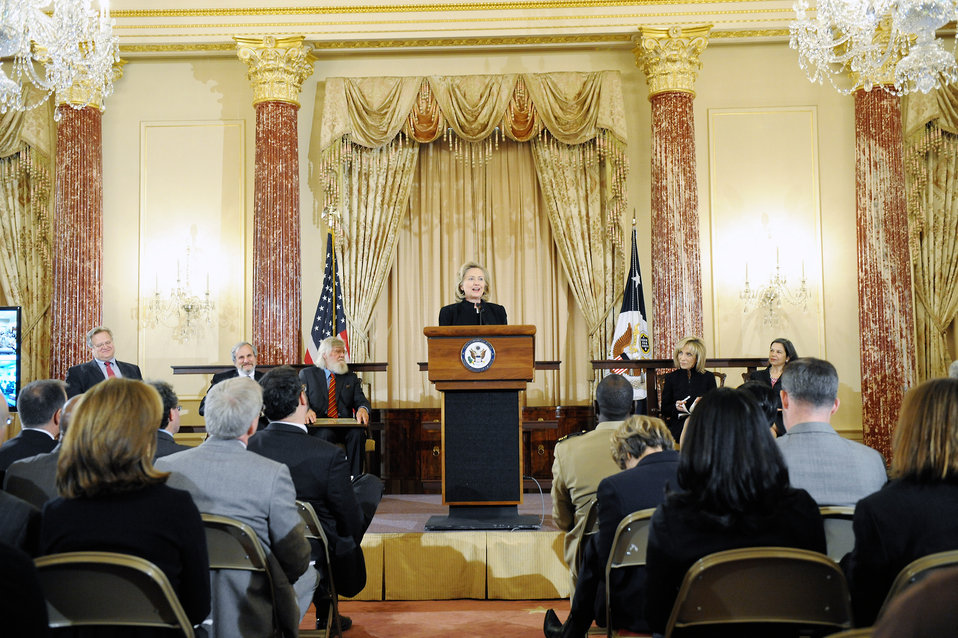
Secretary Clinton Commemorates 60th Anniversary of Refugee Convention

U.S. Secretary of State Hillary Rodham Clinton delivers remarks commemorating the 60th anniversary of the 1951 Convention Related to the Status of Refugees, the international document that defines the rights of refugees and the legal obligation of States to protect them, at the U.S. Department of State in Washington, D.C., on April 6, 2011.